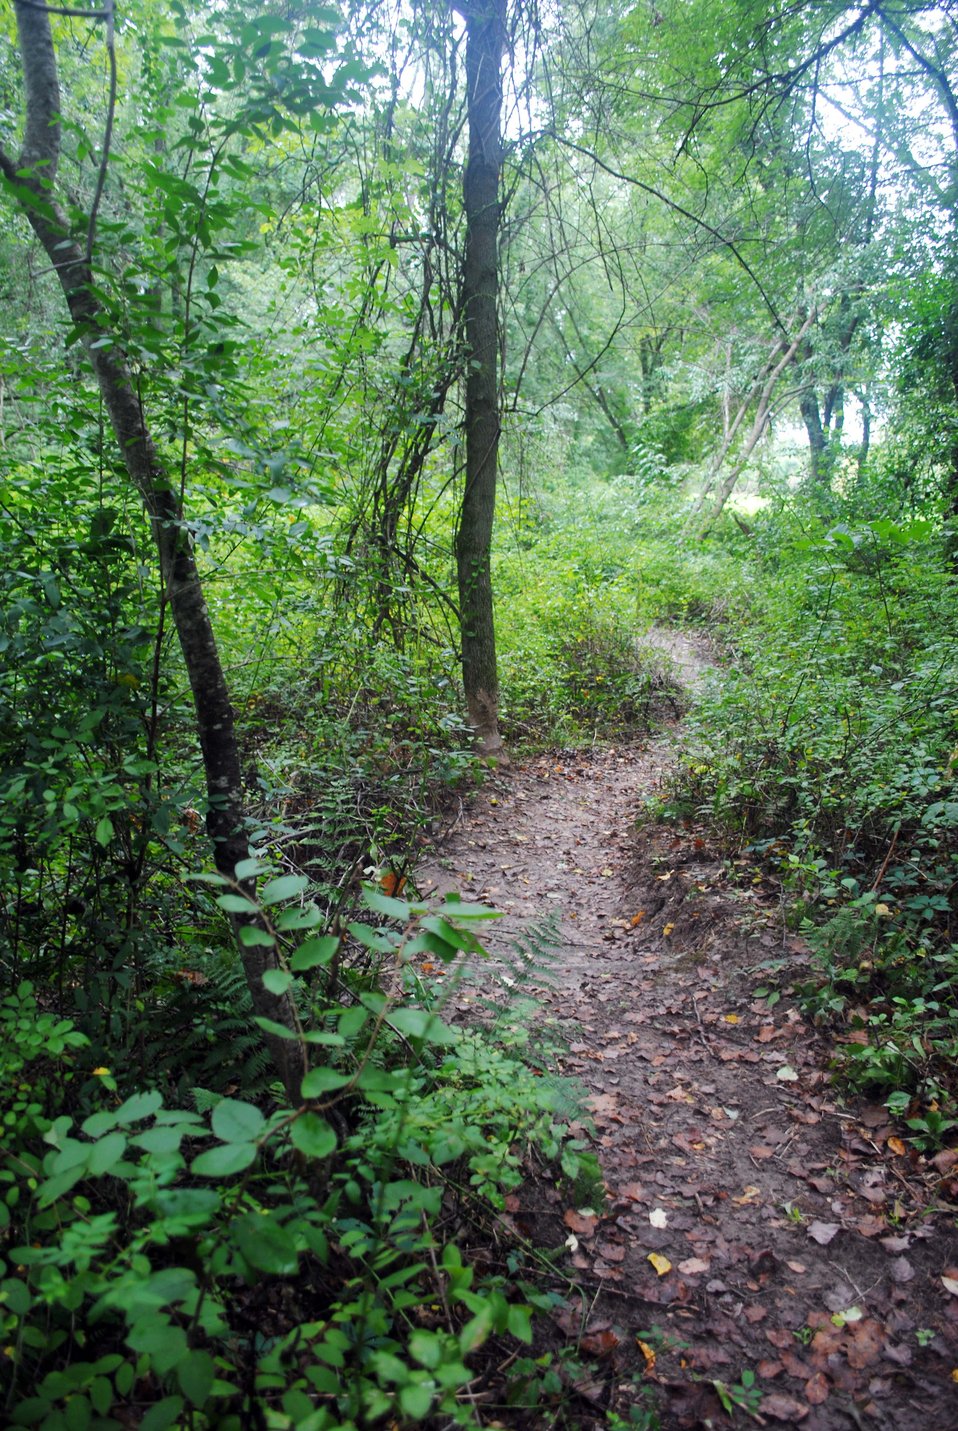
Path Through the Woods

A path at the Fort River Division of the Silvio O. Conte National Wildlife Refuge, Hadley, MA.